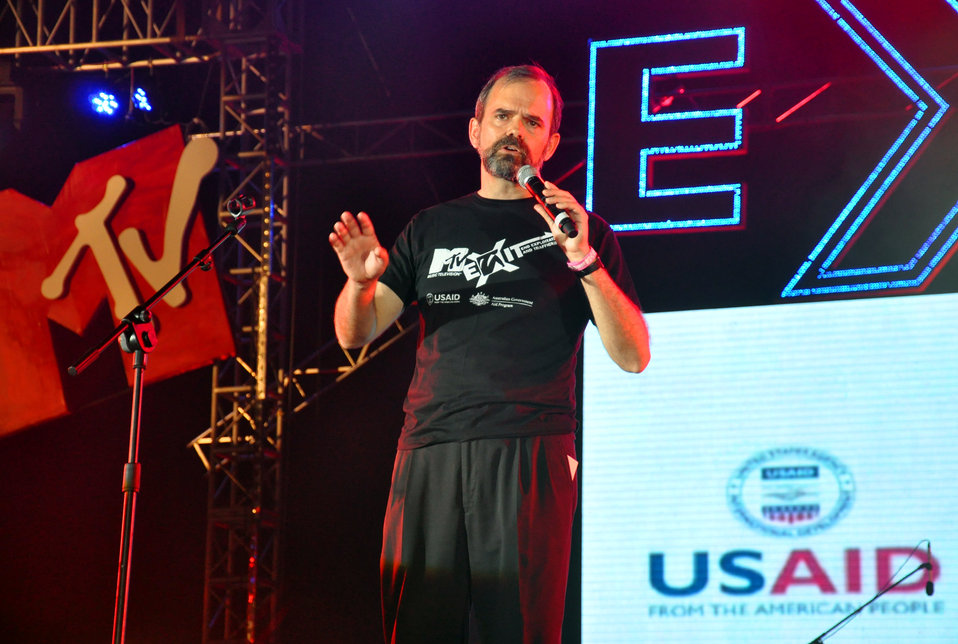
USAID, MTV EXIT concert series in Vietnam, 2010.